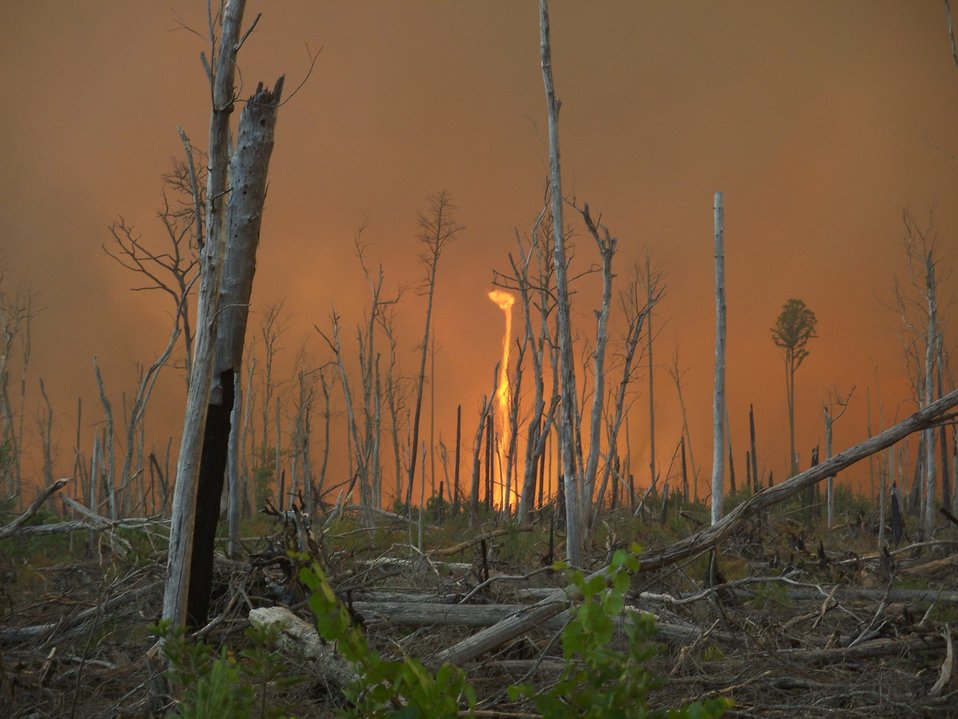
Photo of the Week - Fire whirl at Great Dismal Swamp Refuge (VA)

Photo of the Week - 08/15/11

Suffolk, VA, August 2011: A firey tornado rages off Corapeake Road in the Lateral West Wildlfire on Great Dismal Swamp National Wildlife Refuge. The fire burned in the scar of the 2008 South One Fire in a restoration area for Atlantic white cedar.